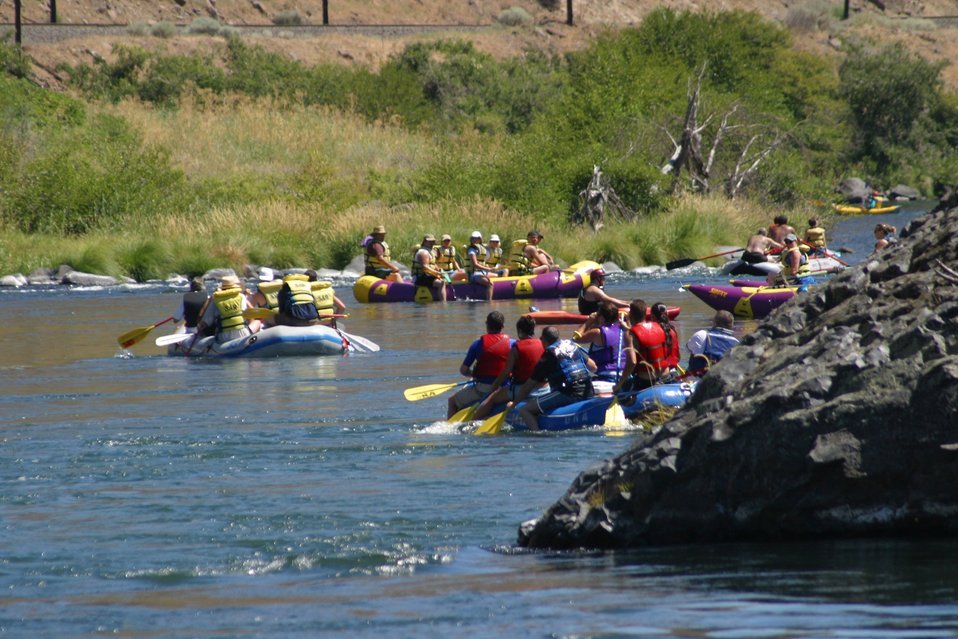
Wapinitia Rapids class III, has large roller coaster waves. 7/26/03 Pelton Dam 3600 cfs: Moody Rapids 4300 cfs.